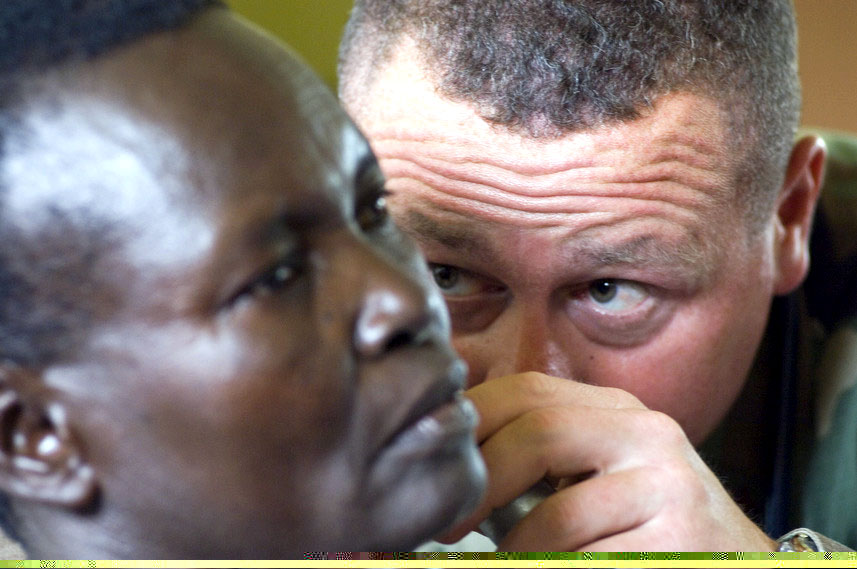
Natural Fire 2006

Maj. Douglas Genereux inspects the ear canal of a Ugandan woman during the training exercise Natural Fire 2006 on Aug. 9 in Serere, Uganda. Major Genereux, a physician assistant with the Rhode Island Air National Guard's 143rd Medical Group, is in eastern Uganda with nine Air National Guard medical professionals to provide medical civil assistance.